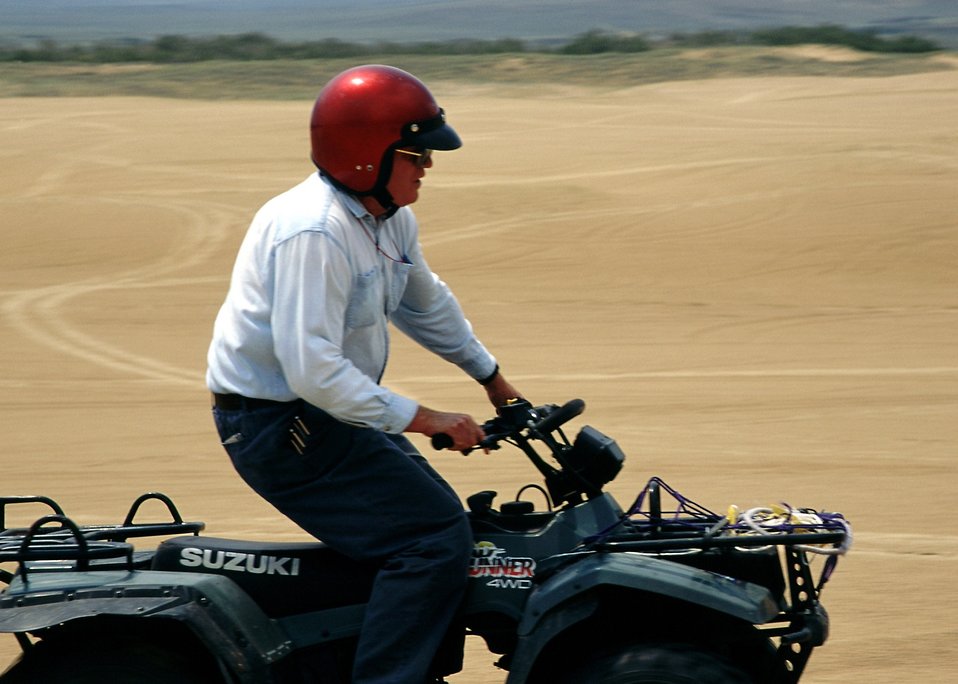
Sand Hills OHV (Dunes)